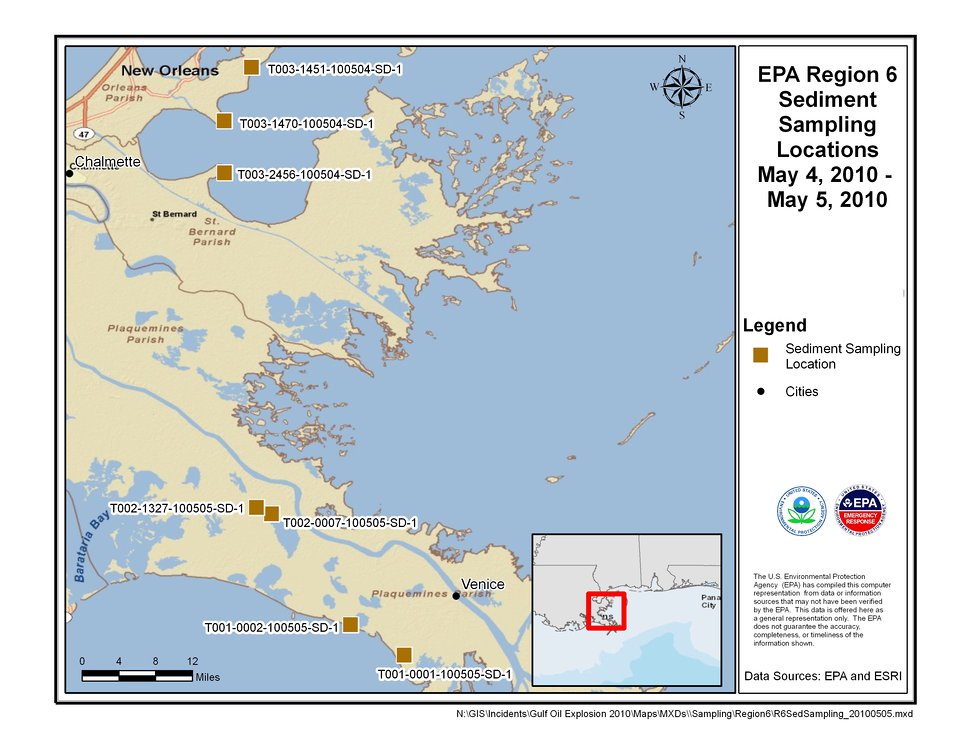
EPA Sediment Sampling Locations May 4-5, 2010